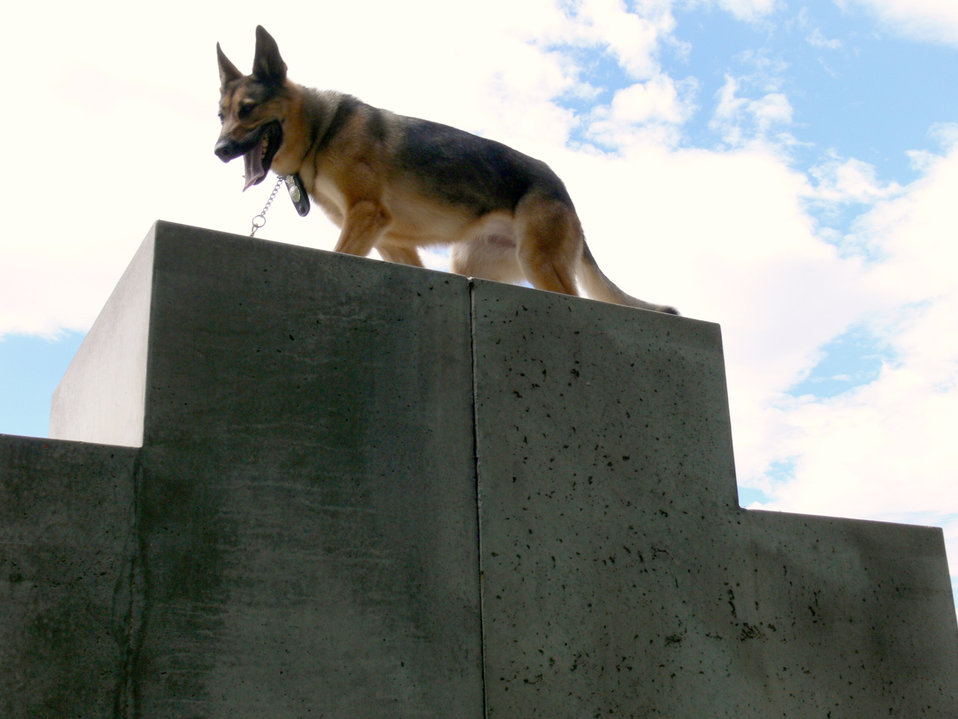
MWD recovers from PTSD

Gina runs through the obstacle course at the dog kennel July 21, 2010, at Peterson Air Force Base, Colo. Gina served her first tour in Southwest Asia this year and returned with post traumatic stress disorder. Gina is a 21st Security Forces Squadron military working dog.